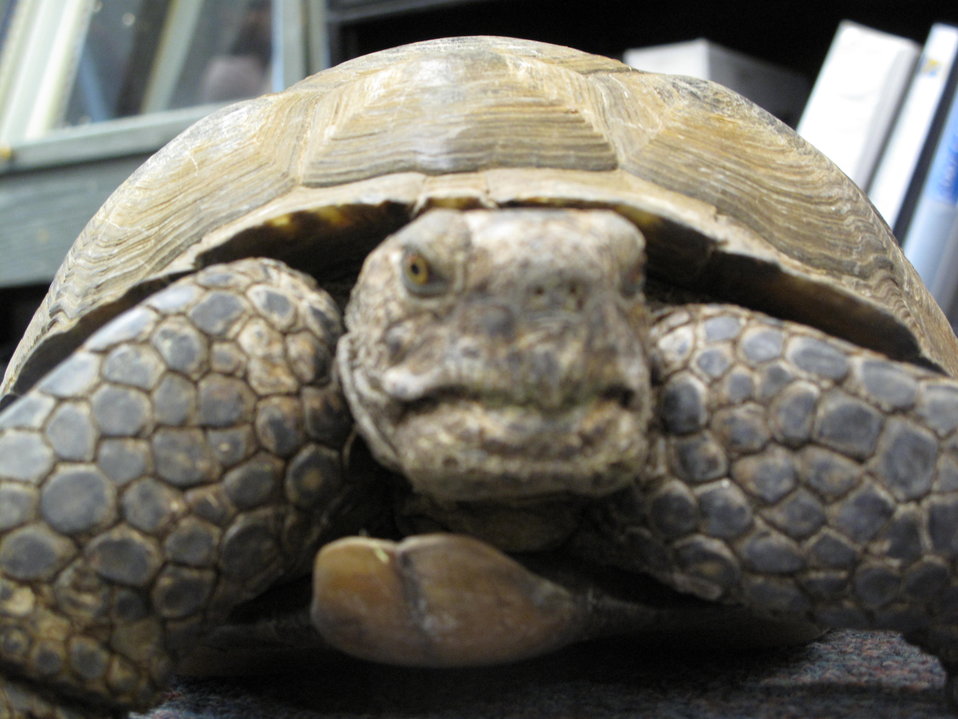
Crush the Desert Tortoise